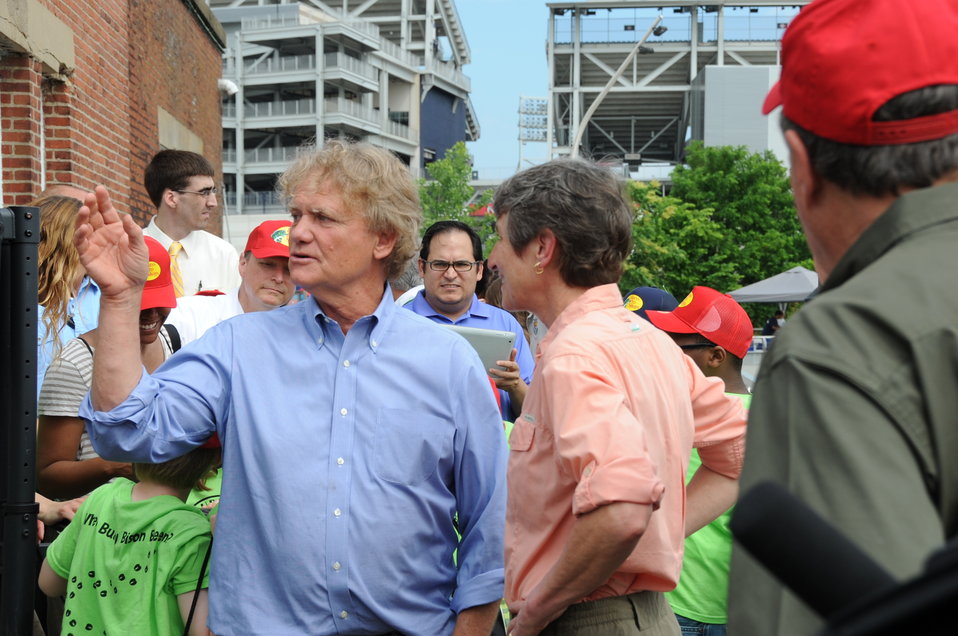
2013 National Fishing and Boating Week

Local students prepare to enjoy fishing at the annual kick-off of National Fishing and Boating Week on the Anacostia River in Washington D.C.